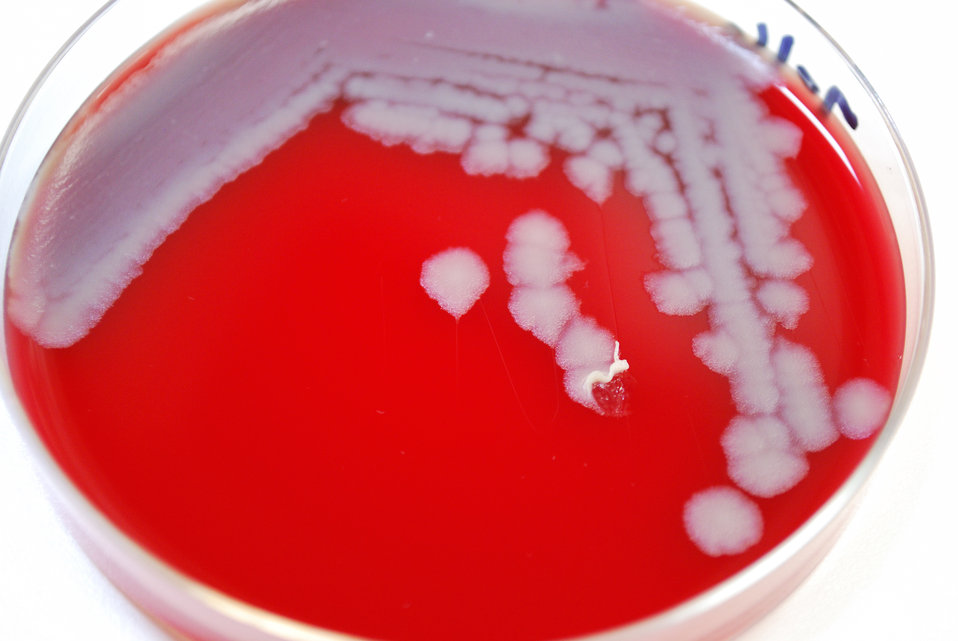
This image depicted numbers of Bacillus anthracis bacterial colonies, which had been allowed to grow on sheep's blood agar (SBA) for a 24 hour period. Note the classical appearance exhibited in the colonial morphology including a ground-glass, non-pigmented texture with accompanying 'comma' projections from some of the individual rough-edged colonies. In this particular view, you'll note that a 'tenacity test' had been performed using an iinoculating loop, which proved positive for B. anthracis, causing the 'colony to 'stand up' like beaten egg white'.